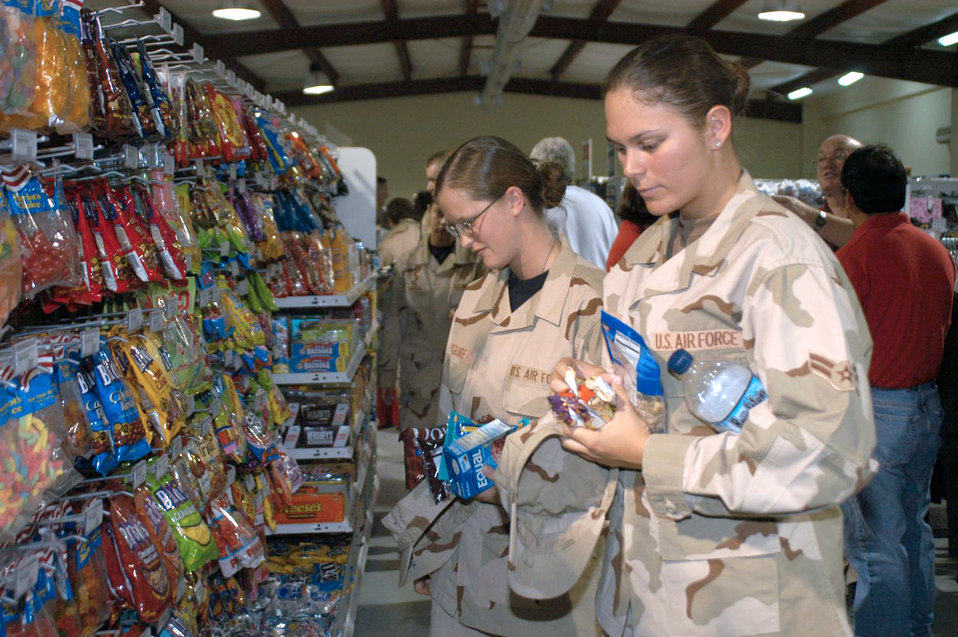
Shopping day

SOUTHWEST ASIA -- Airmen 1st Class Jamie McGuire and Ashley Mead shop for snacks at the new base exchange at a forward-deployed location. Airmen waited patiently to go inside the new 7,000-square-foot facility compared to the 1,500-square-foot previous one. The Airmen are assigned to the 386th Expeditionary Civil Engineer Squadron and are deployed from Little Rock Air Force Base, Ark.